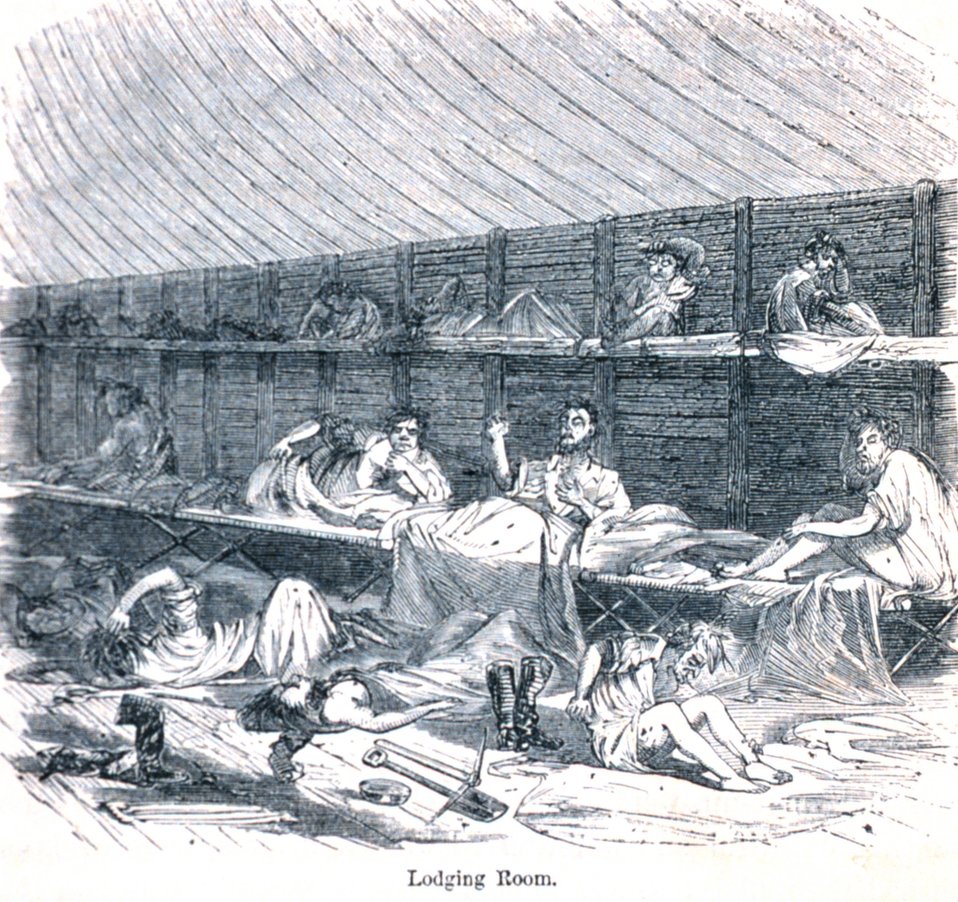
Lodging room. In: 'The Annals of San Francisco'. Frank Soule, John Gihon, and James Nesbit. 1855. Page 247. D. Appleton & Company, New York. F869.S3.S7 1855.